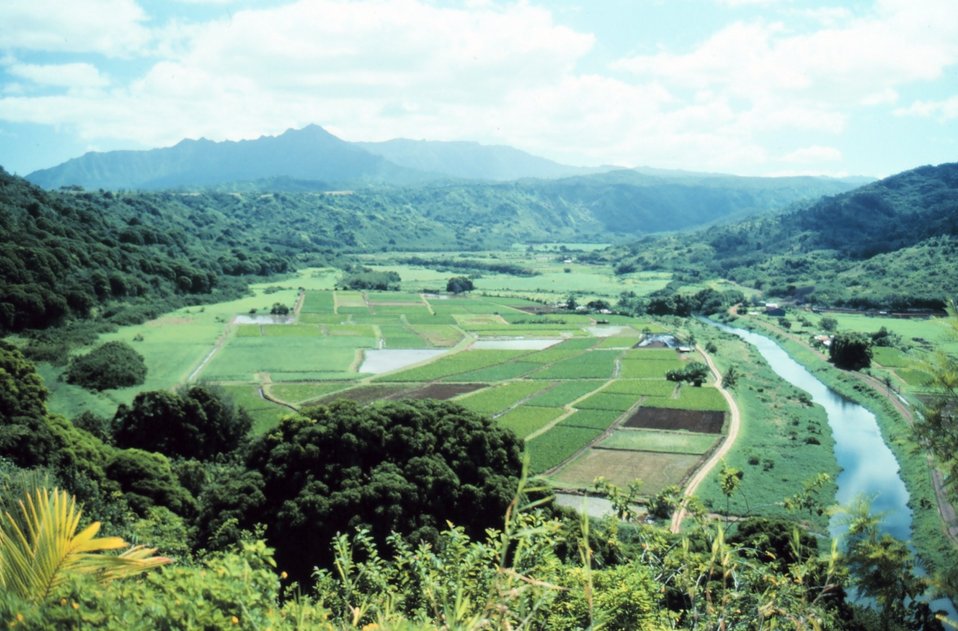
Plantation on Kauai